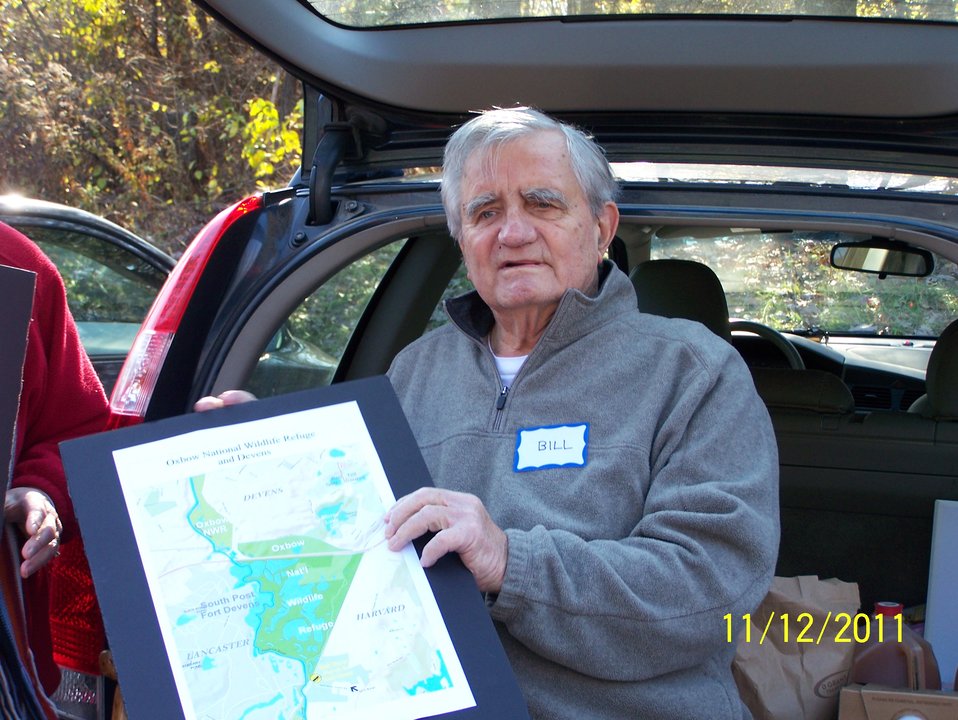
Bill Ashe, Director Dan Ashe's father